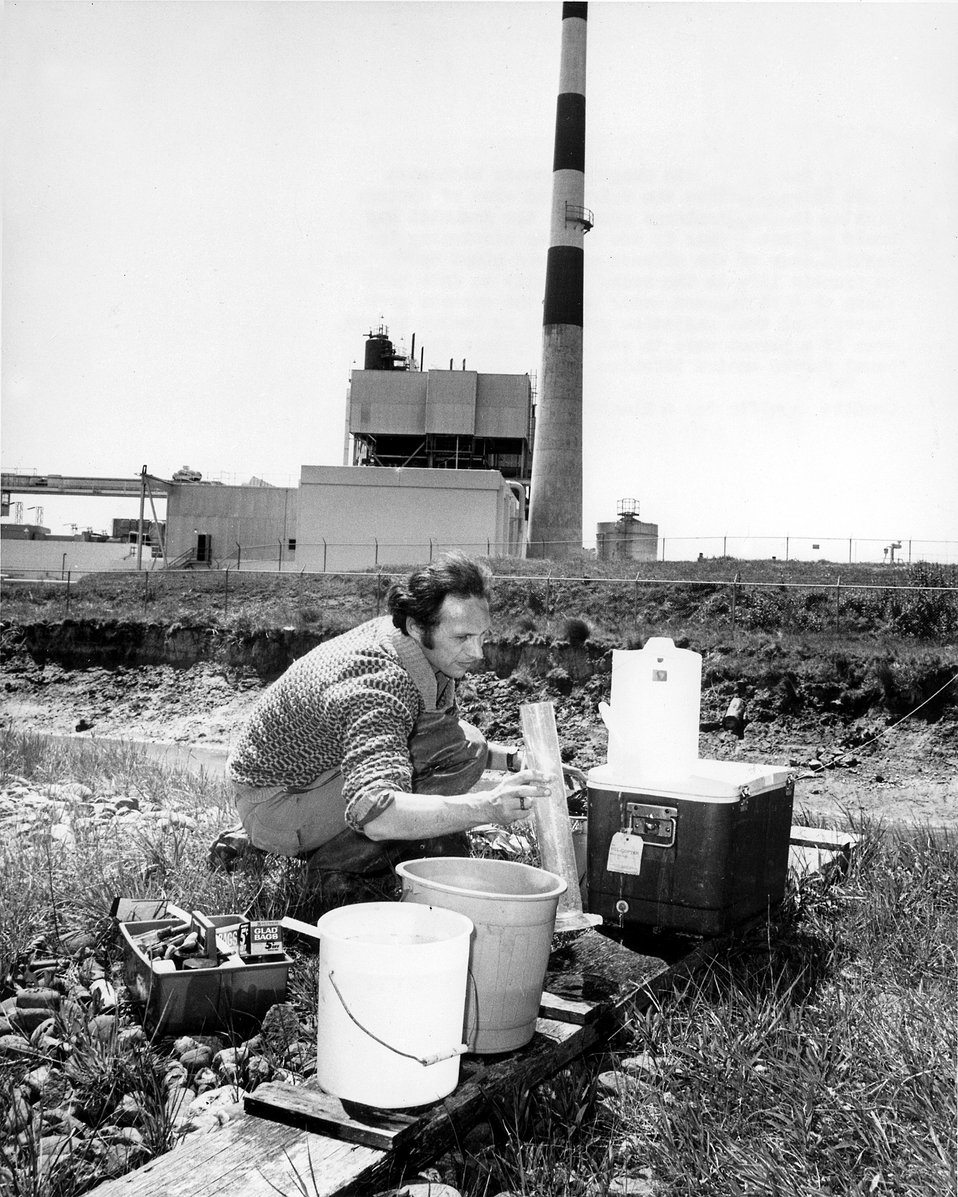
Aquatic biologist measures the volume and size of oysters growing in the discharge canal at the Humbolt Bay Nuclear Plant.